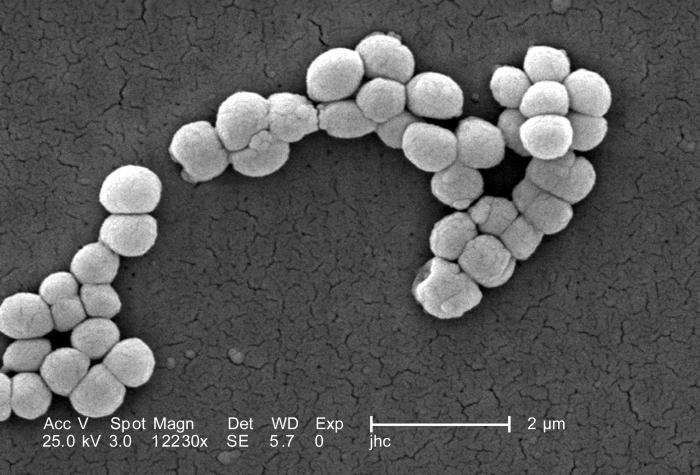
Under a high magnification of 12230x, this scanning electron micrograph (SEM) depicted some of the ultrastructural morphologic features displayed by this group of Gram-positive Micrococcus luteus bacteria. The specimen was obtained from a pure culture that was raised on a polycarbonate filter, for the purpose of identification of the organism.